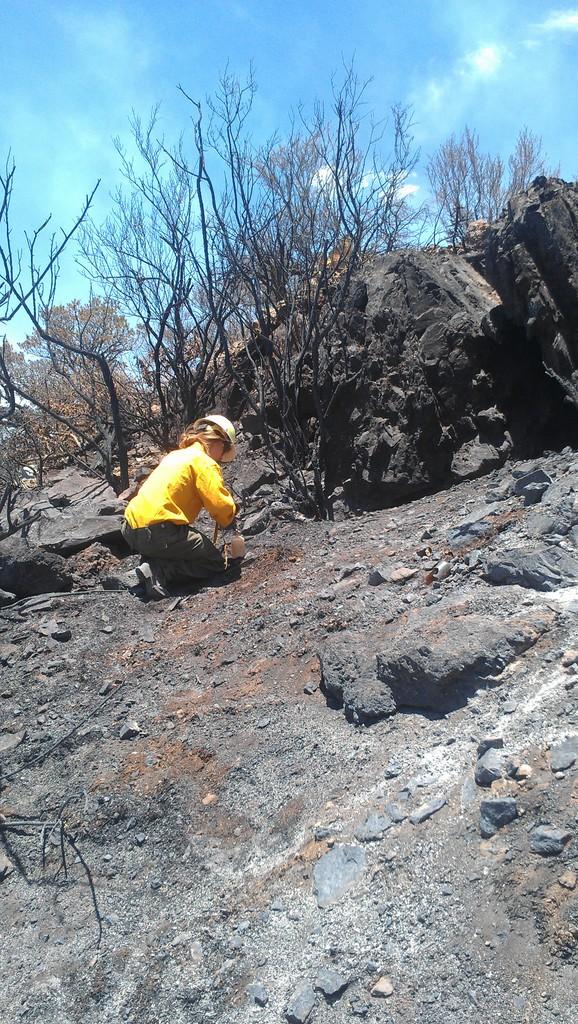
A soil scientist with the Burned Area Emergency Response (BAER) team tests for water penetration on at a high severity burn area. The Silver Post Fire response has the Burned Area Emergency Response (BAER) team beginning operations to seed acres of high burn severity and to mulch additional acres. Seeding reduces effects to downstream life, property, and infrastructure by reducing erosion and runoff. Areas of high burn severity are to be seeded with a quick germinating, non-persistent annual cereal barley that would provide rapid ground cover. A small percentage of native perennial species would also be included to give the burned area a jump start in natural recovery, and provide for long-term ground cover. Mulch is the most effective treatment for controlling erosion and runoff, as it provides immediate ground cover. Mulch also assists in stabilizing soil in and around these areas.